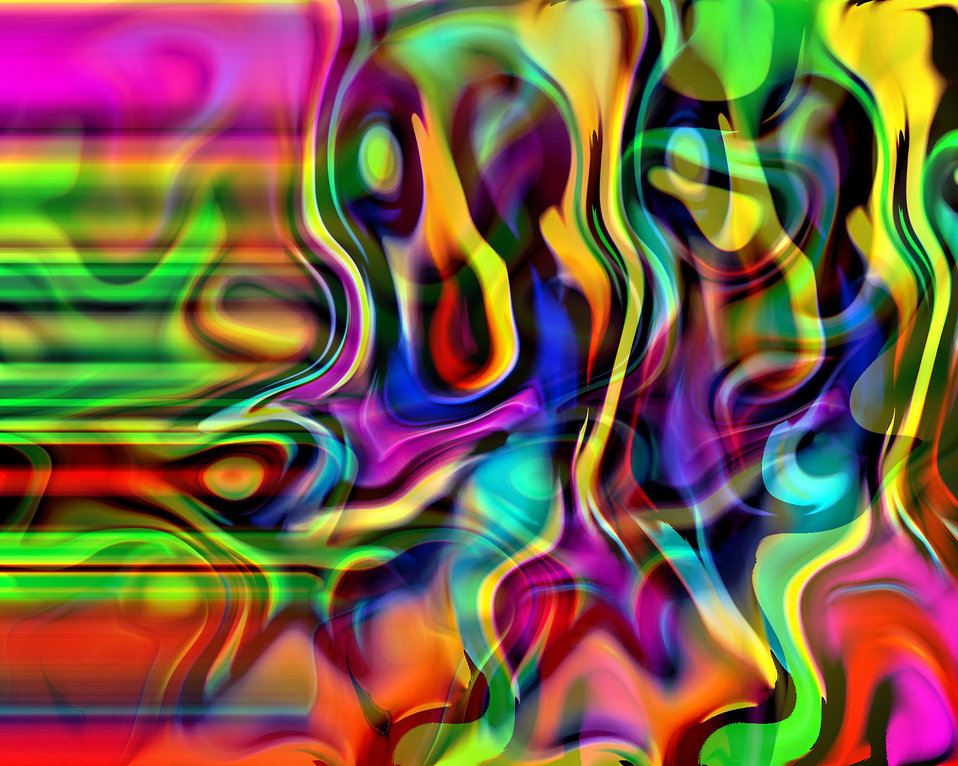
Pushing

Background.